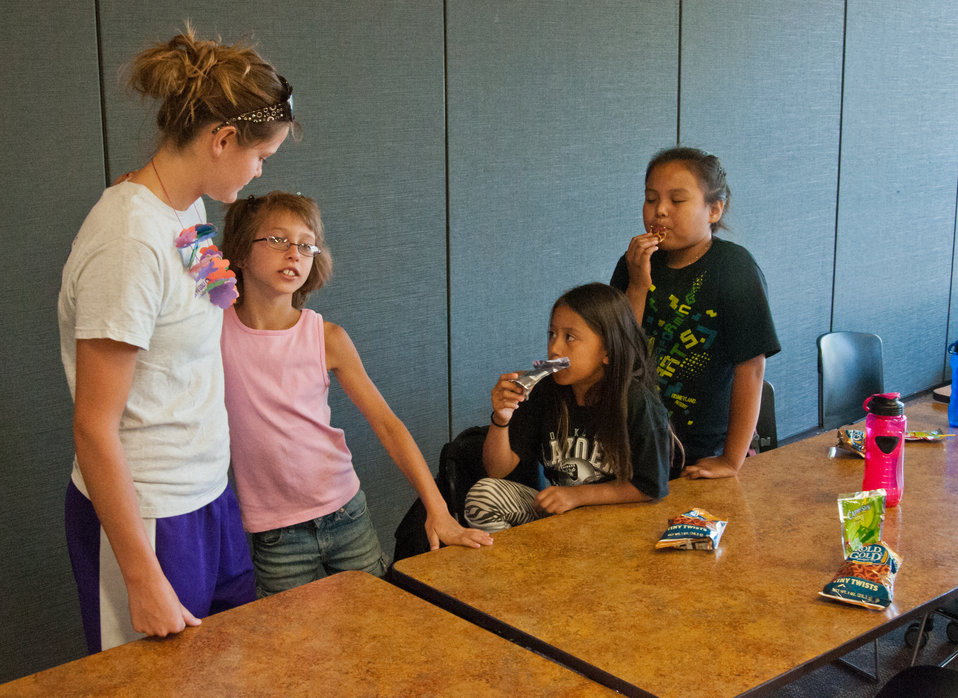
(L to R) Head Counselor Caitlin Simbeck, Alyannah Parrish, Tanneigha O’John, and D’Vondra Garcia enjoy a snack at the Boys and Girls Club of the Southern Ute Indian Tribe in Ignacio, CO on Thursday, Jun. 13, 2013. The U.S. Department of Agriculture’s (USDA) Food and Nutrition Service (FNS) assists the club with healthy snacks while the children are participating in programs at the Southern Ute Community Center.